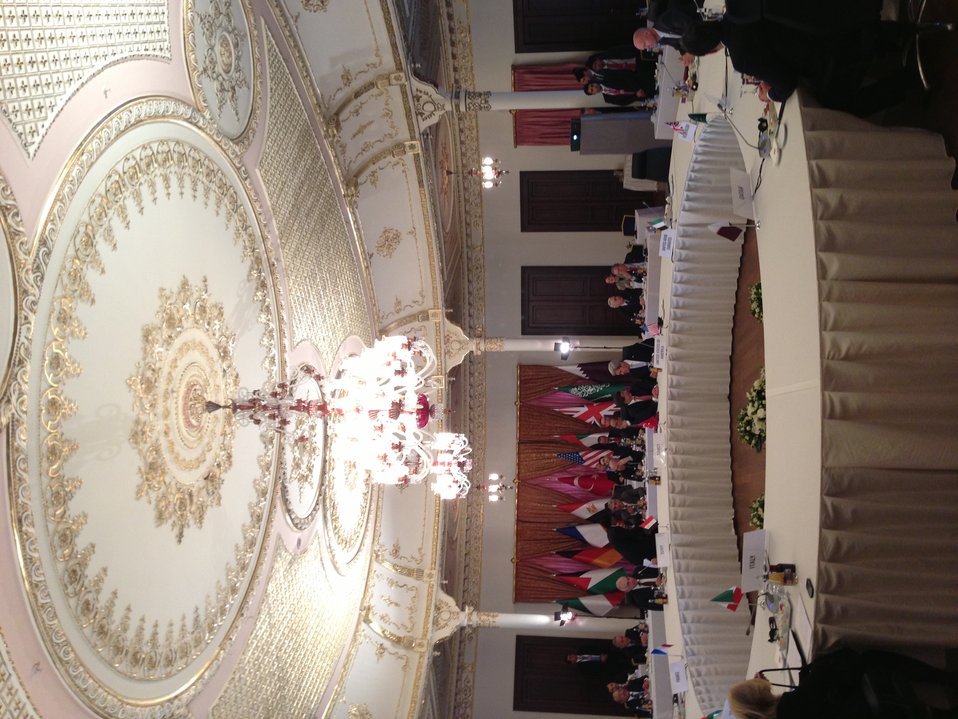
Secretary Kerry Speaks With Turkish Foreign Minister Davutoglu

U.S. Secretary of State John Kerry speaks with Turkish Foreign Minister Ahmet Davutoglu before the Friends of Syria Core Group Ministerial in Istanbul, Turkey on April 20, 2013.